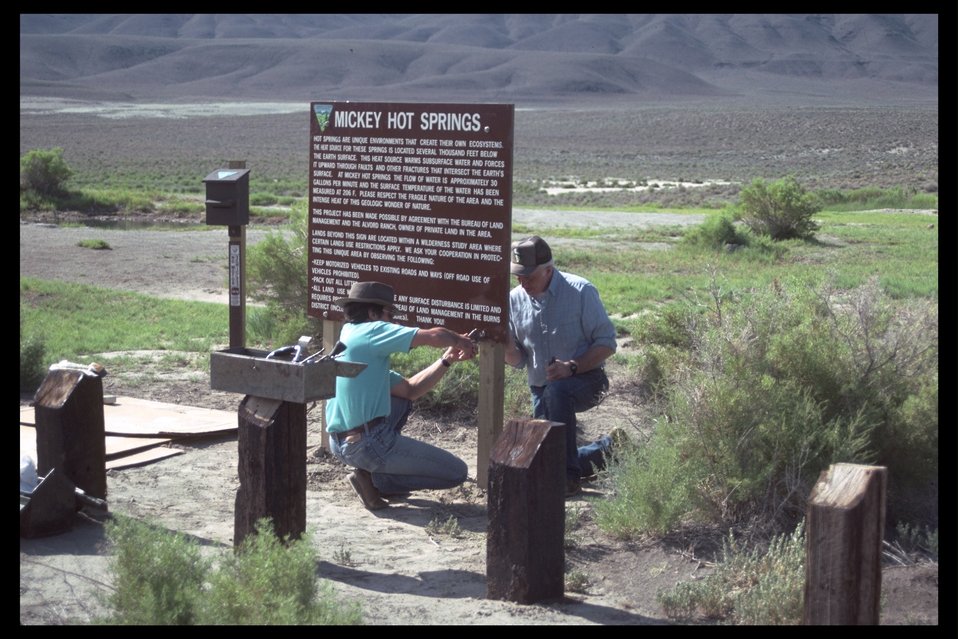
East Alvord WSA, installing information signs at Mickey Hot Springs. (WSA 2-73A)